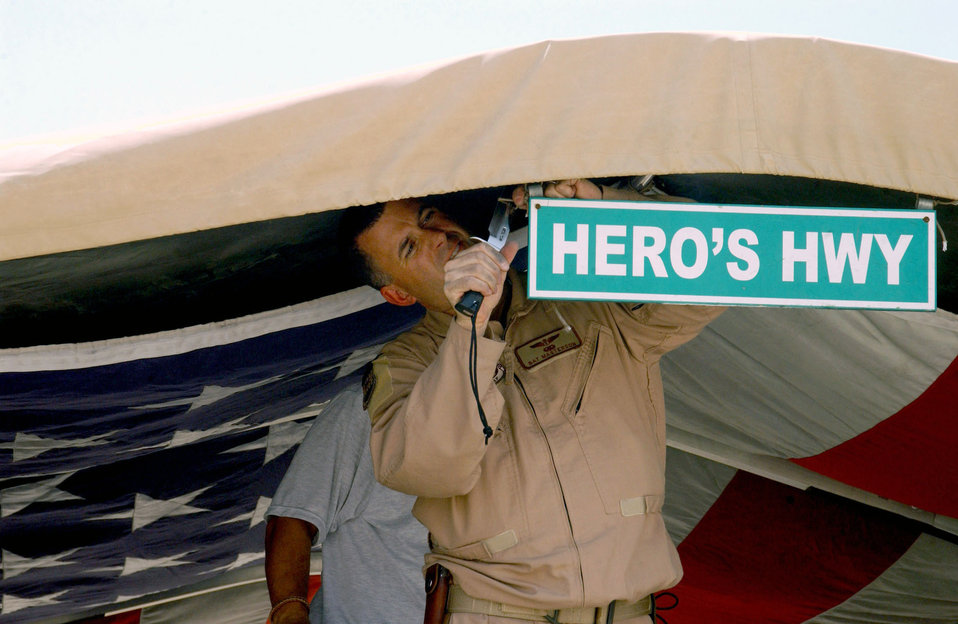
Hero's Highway

Col. (Dr.) Brian Masterson, 332nd Expeditionary Medical Group commander, hangs the Hero's Highway sign at the new Air Force Theater Hospital at Balad Air Base, Iraq, July 19. Wounded servicemembers travel on the Hero's Highway as they make their way from the helicopter pad to the hospital. The new facility, which opens Aug. 3, will have about 97,000 square feet featuring 20 intensive care units, 40 beds and up to eight operating tables.